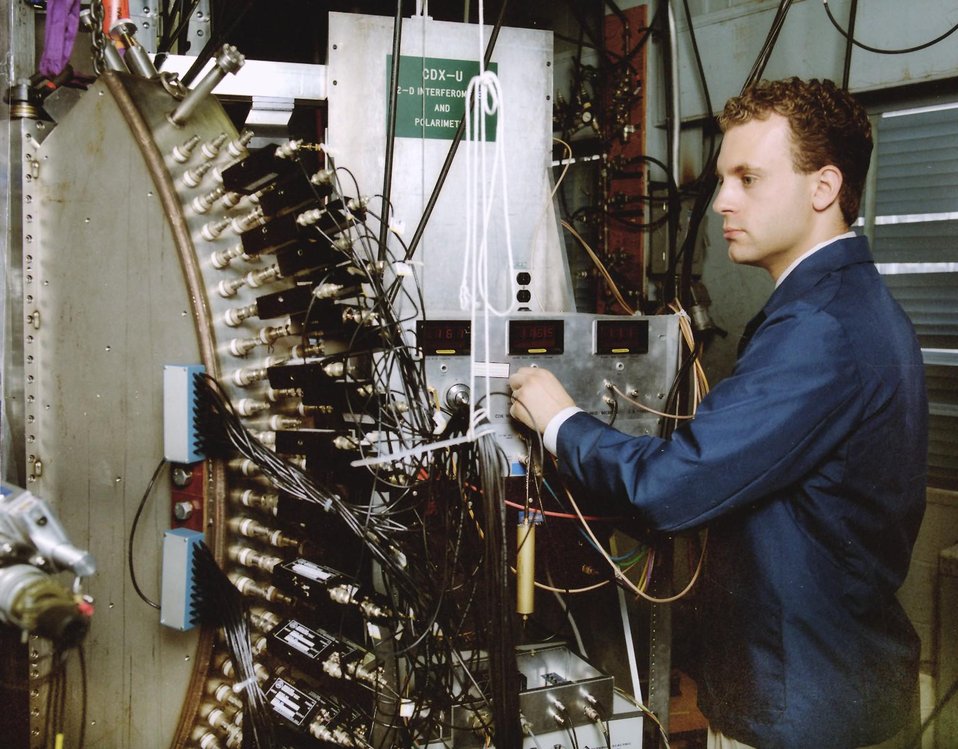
PPPL SCIENTIST IN THE CURRENT DRIVE EXPERIMENT-UPGRADE (CDX-U).

EXPERIMENTS IN PROGRESS ON THE CURRENT DRIVE EXPERIMENT-UPGRADE AT THE PRINCETON PLASMA PHYSICS LABORATORY MAY LEAD TO IMPROVED PLASMA PERFORMANCE IN THE NEAR TERM AS WELL AS SOLUTIONS AND DEVELOPMENTS IN PLASMA SCIENCE TECHNOLOGY.